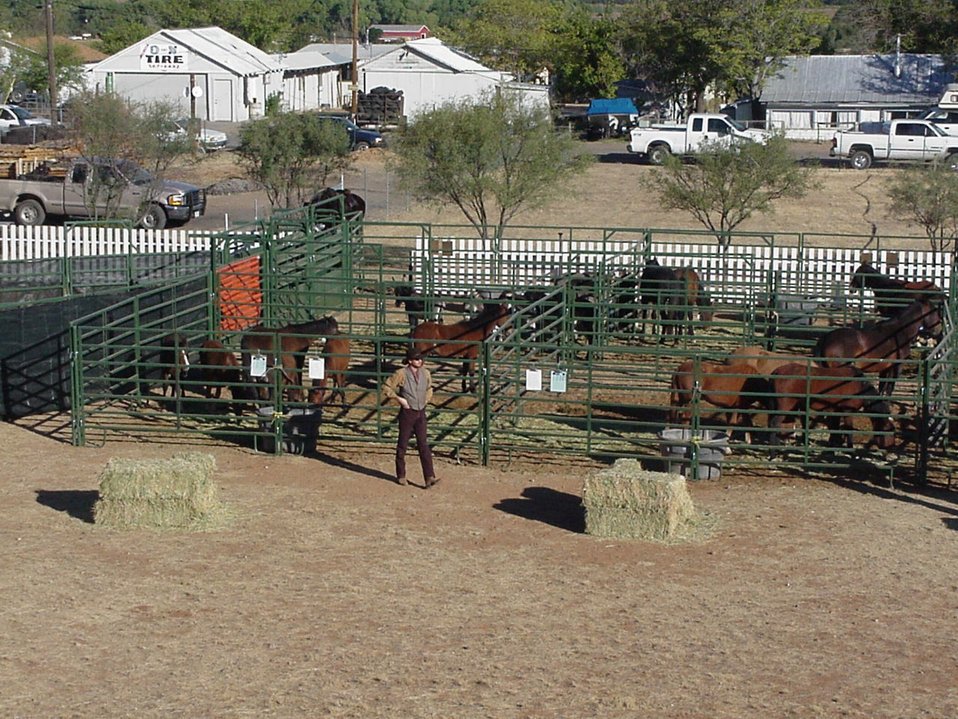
The horses wait in their corrals to be adopted by loving new families.